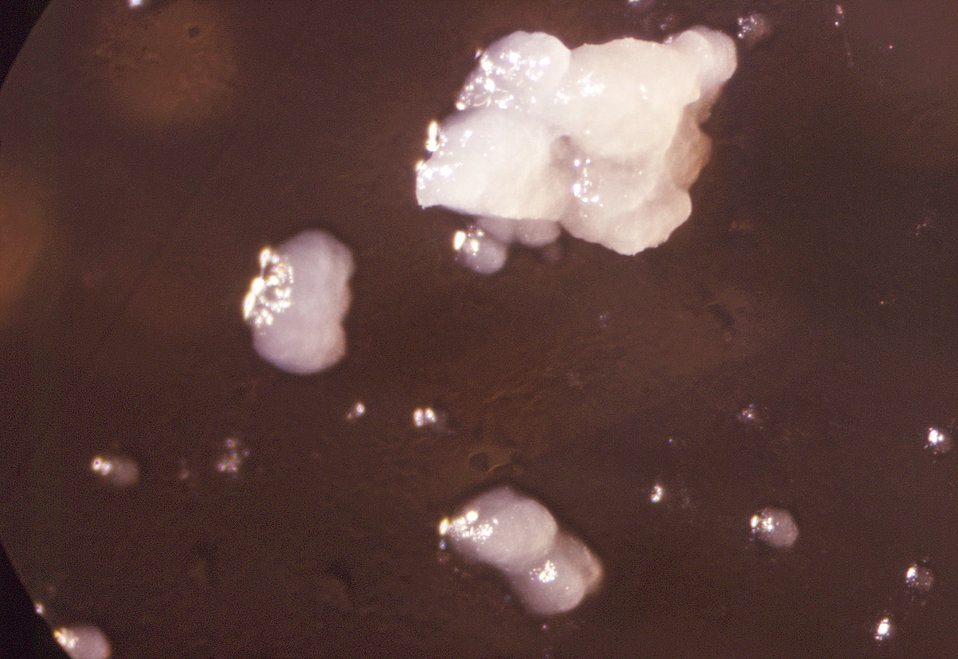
Magnified 18.5X, this image depicts the morphologic characteristics displayed by numbers of mature Gram-positive, Actinomyces naeslundi bacterial colonies, of the 'rough' strain, W-1096, which were cultivated on an unknown culture medium.